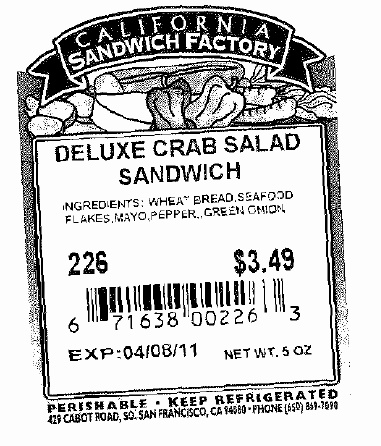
RECALLED - Sandwiches

April 12, 2011 - Product Recall - A-1 Sandwich Company Voluntarily Recalls Sandwiches with Undeclared Allergens.